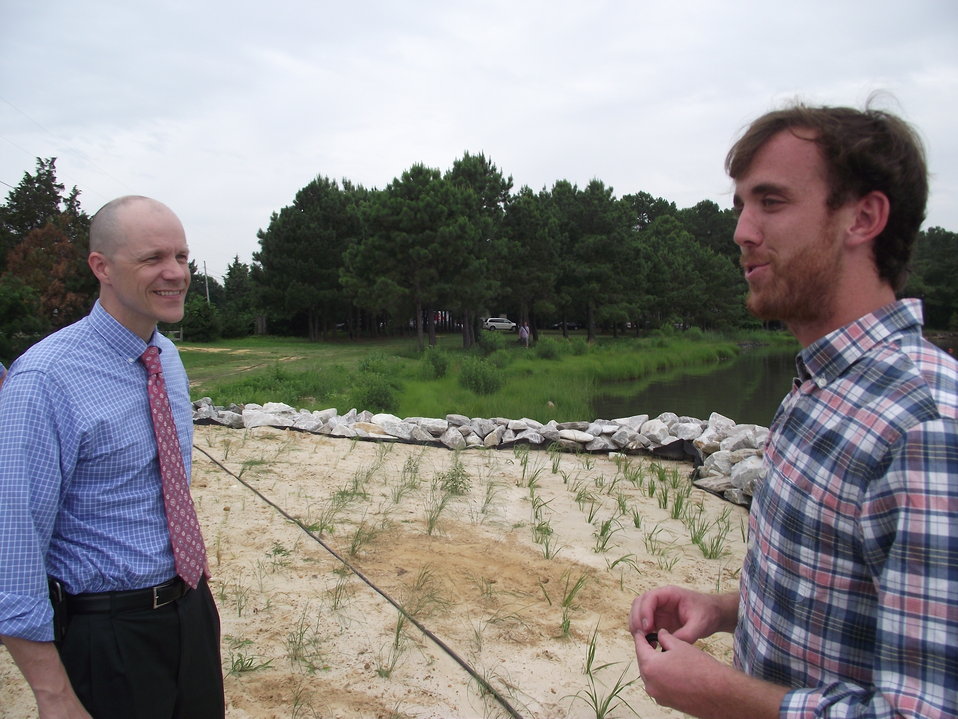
U.S. Department of Agriculture (USDA) Rural Development (RD) Acting Under Secretary Doug O’Brien O’Brien speaks with True Chesapeake Oyster Company Operations Manager Patrick Hudson. The U.S. Department of Agriculture’s (USDA) Rural Development (RD) agency announced funding support for the Chesapeake Bay Oyster. True Chesapeake Oyster Company will use the funding to support shoreline restoration and repair an existing pier at its oyster growing operation in St. Jerome Creek. In the background is some of the shoreline restoration that USDA funding helped support.